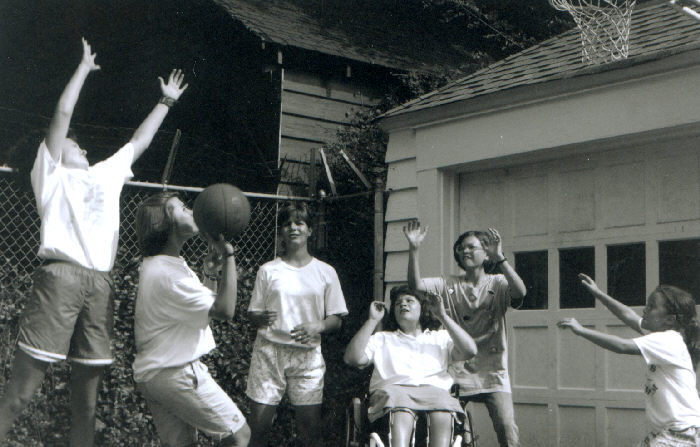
Physically challenged children